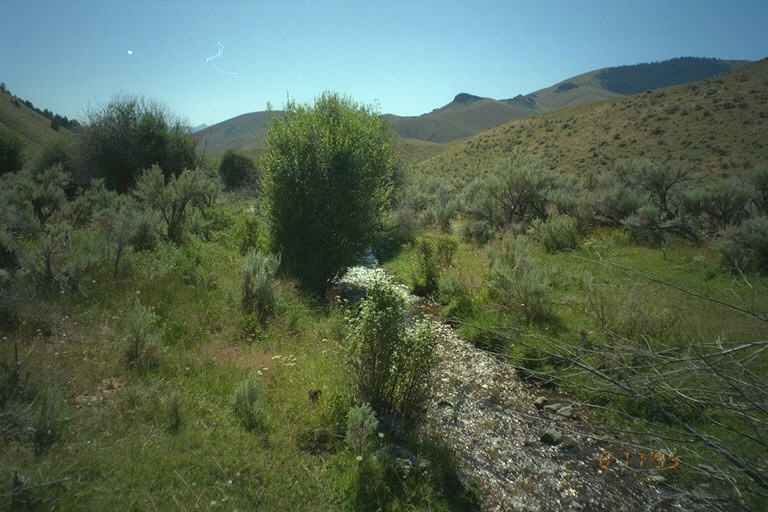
Riparian area Public Lands Salmon Field Office UCSC Upper Columbia Salmon Clearwater District